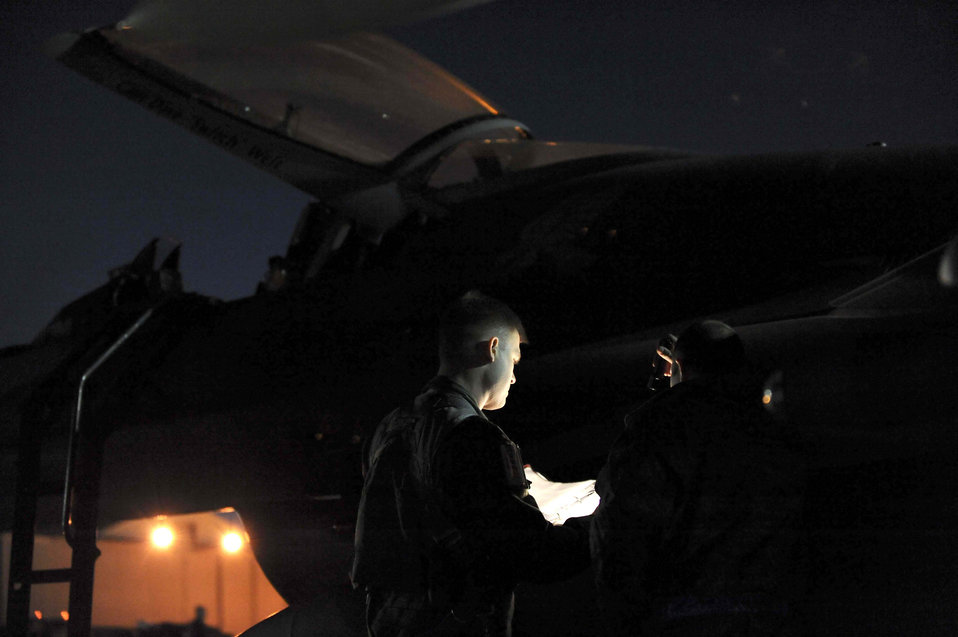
Nighttime operations

Capt. Mike Willhide (left) reviews his F-16 Fighting Falcon preflight paperwork with Airman 1st Class Patrick Densford before night flying operations during Red Flag 09-3 Feb. 26 at Nellis Air Force Base, Nev. Red Flag is a multinational exercise providing a realistic environment to practice combat scenarios. Airman Densford is a 52nd Aircraft Maintenance Squadron F-16 crew chief deployed from Spangdahlem Air Base, Germany. Captain Willhide is a 157th Fighter Squadron F-16 pilot deployed from McEntire Joint National Guard Base, S.C.